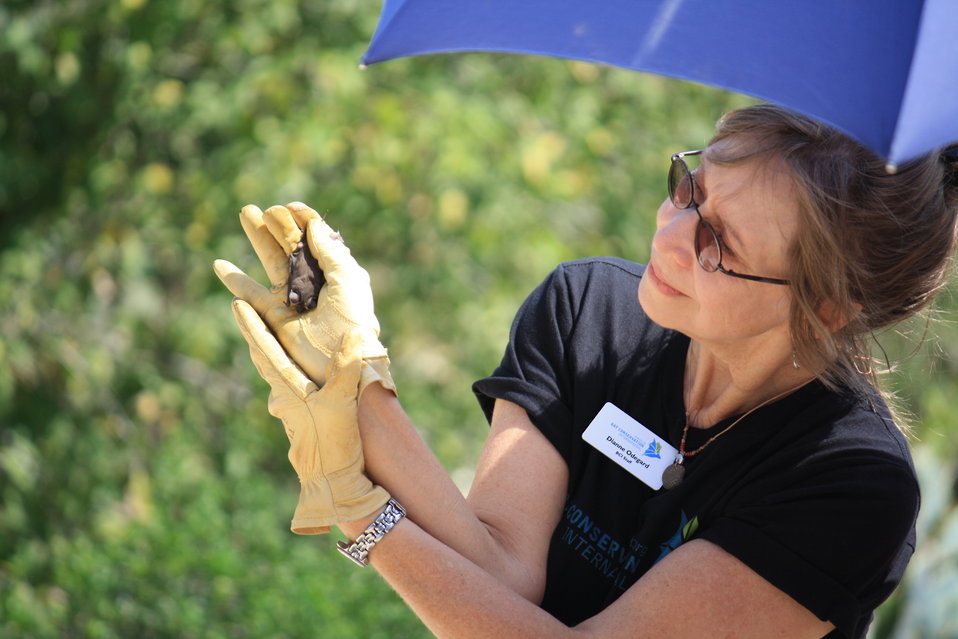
BCI educator Dianne Odegard and bat

BCI educator Dianne Odegard holds Mexican free-tailed bat